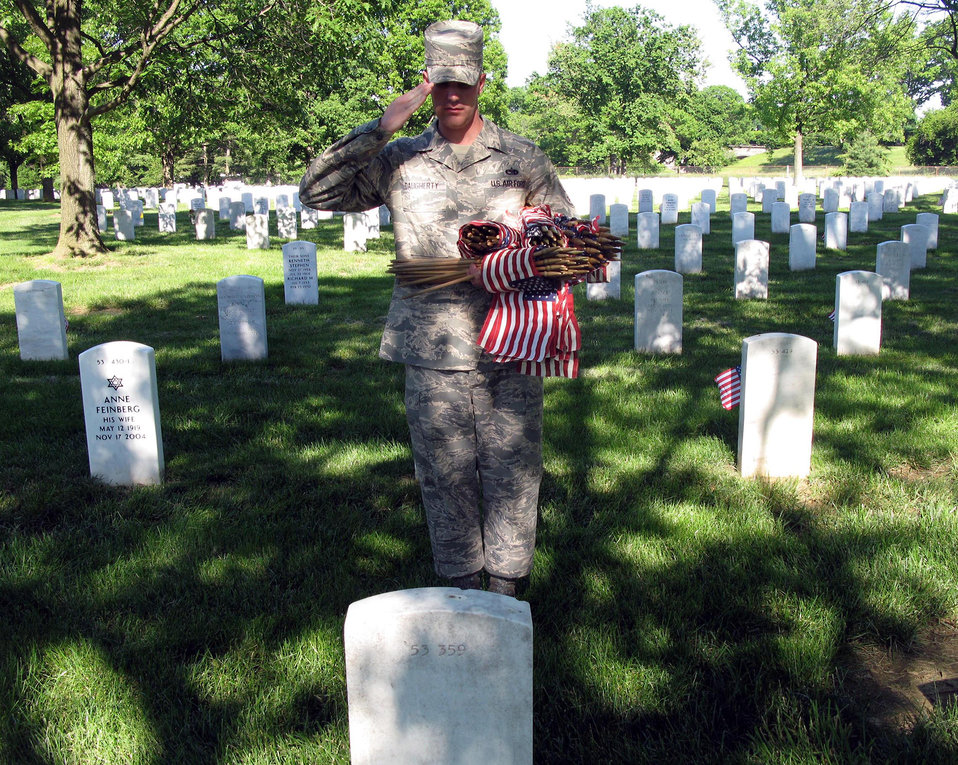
For your sacrifice

Airman Jacob Proffer, a member of the Air Force Honor Guard, salutes a grave after placing a miniature flag at the headstone during the